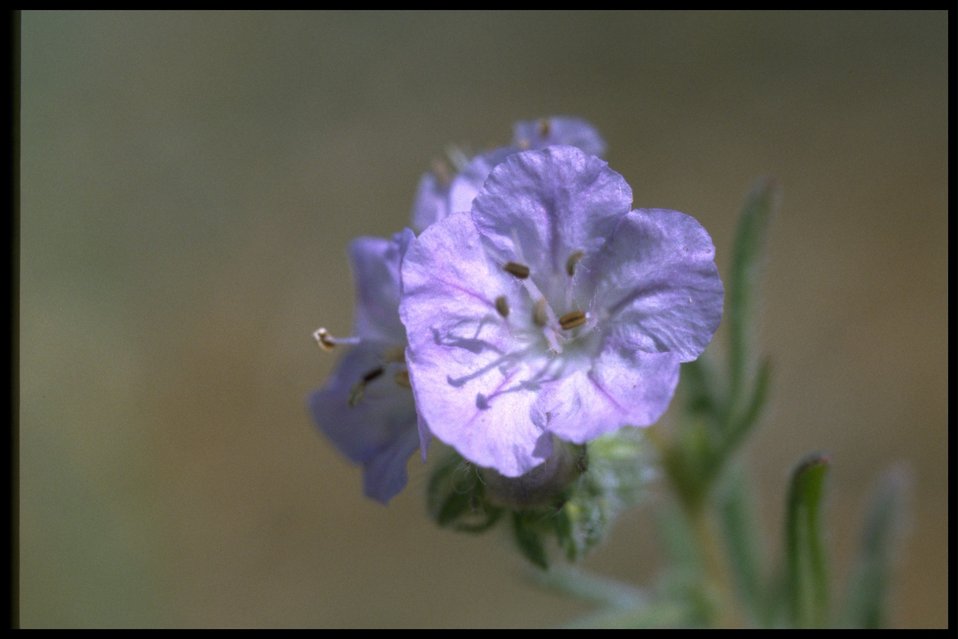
Closeup shot of Linear-leaf Phacelia wildflower.